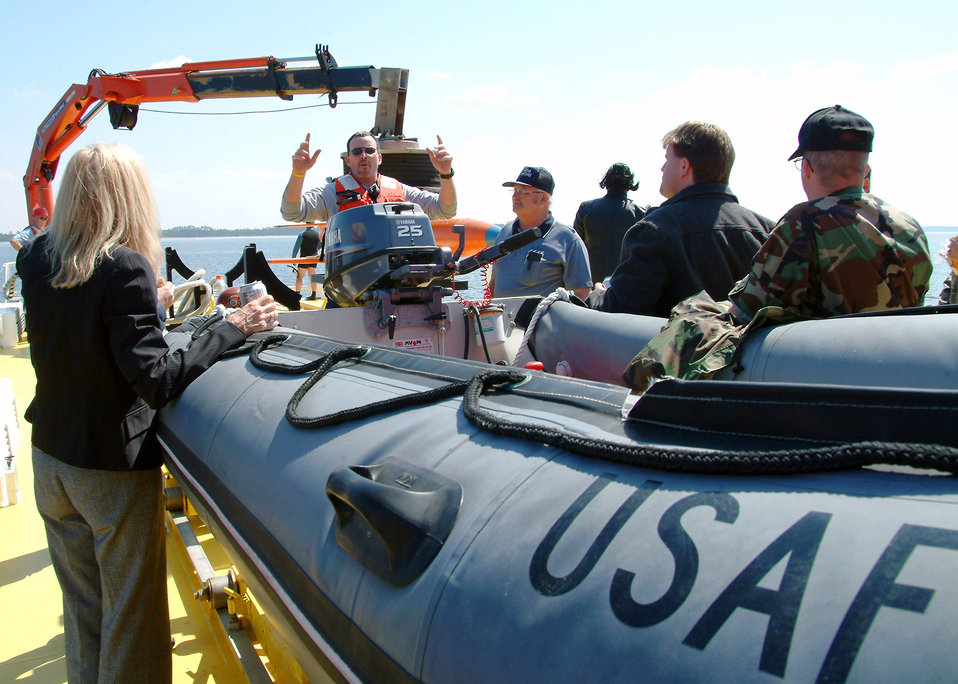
Air Force's navy

John Wise briefs a tour group on sub-scale drone recovery before his team performs a demonstration March 26 in the waters off of Tyndall Air Force Base, Fla. The ship used for recovery is one of only three 120-foot boats owned by the Air Force. They are contracted through the 82nd Aerial Targets Squadron to help recover sub-scale drones after they are shot down during live fire exercises.